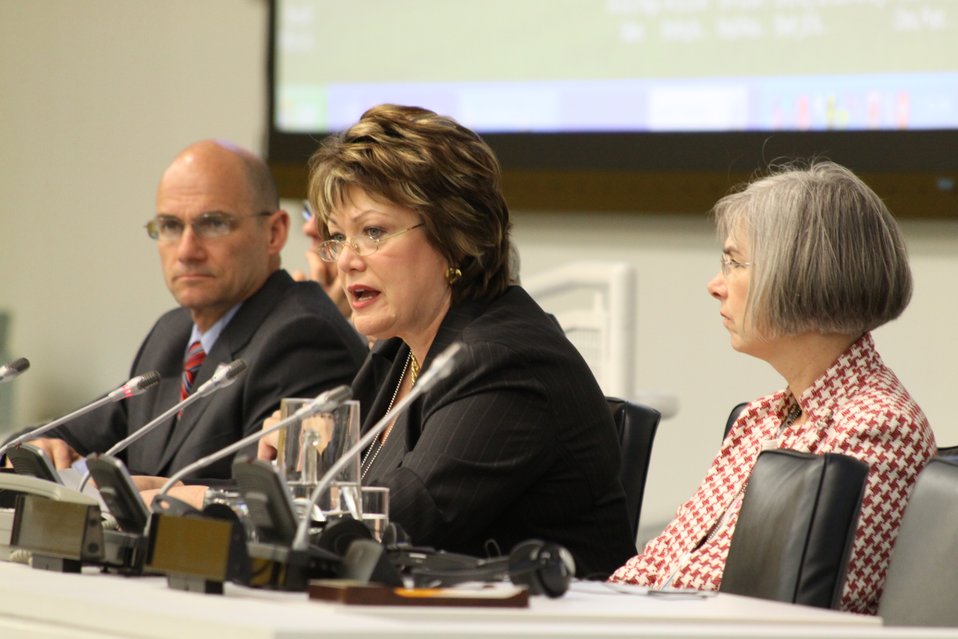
Under Secretary D’Agostino, Under Secretary Tauscher, and Special Representative for the President Burk Participate at U.N. Nuclear Nonproliferation Treaty Conference

Under Secretary for Nuclear Security and Administrator D’Agostino, Under Secretary of State for Arms Control and International Security, and Special Representative of the President for Nuclear Nonproliferation participate in the U.S.-sponsored disarmament side event at the Review Conference of the Nuclear Nonproliferation Treaty at the U.N. Headquarters, New York, New York, May 4, 2010.